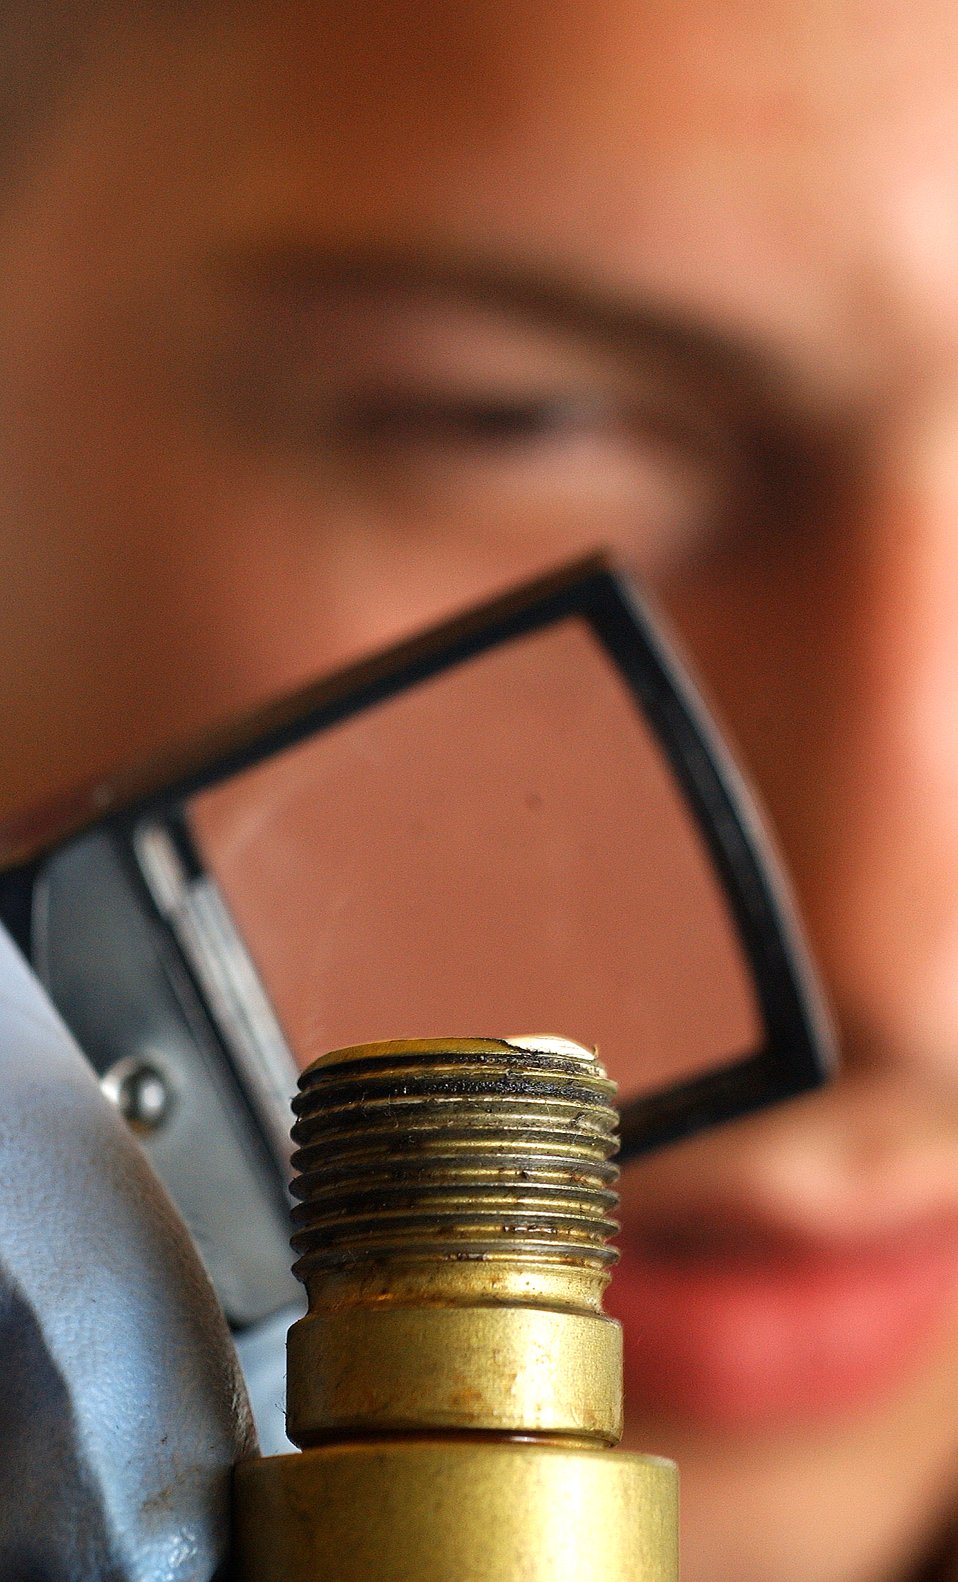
Close inspection

AVIANO AIR BASE, Italy -- Airman 1st Class Sean Ingalls inspects an F-16 Fighting Falcon engine part here June 22. He is a hydraulic systems journeyman with the 31st Maintenance Squadron.